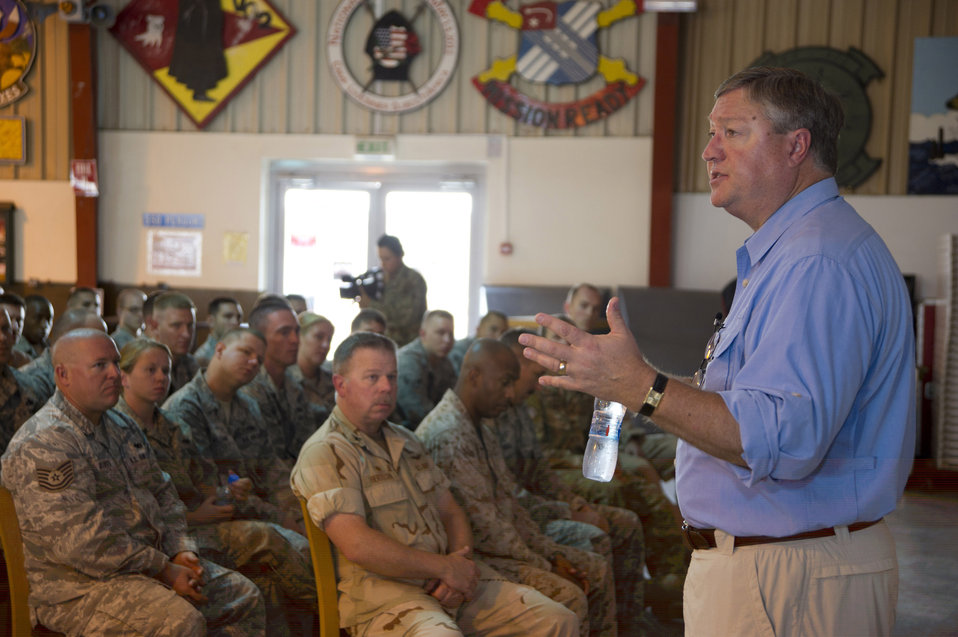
SecAF travels to Djibouti

During his visit to Camp Lemonnier, Djibouti, on Aug. 22, 2012, Secretary of the Air Force Michael Donley talks about the important role the Air Force plays in support of the Combined Joint Task Force - Horn of Africa mission. “Thank you for what you’re doing for the Air Force and our nation,” Donley said. “[To build] partner nation capacity, it takes every Airman doing his or her job.”